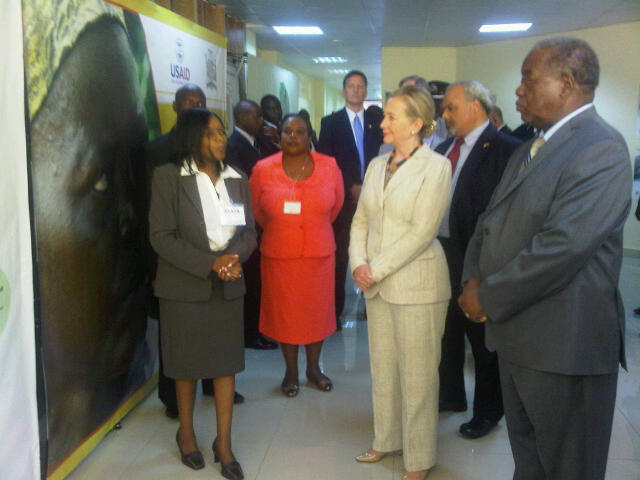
Secretary Clinton and Ambassador Goosby Tour a Hospital in Lusaka

U.S. Secretary of State Hillary Rodham Clinton tours the University Teaching Hospital Paediatric Centre of Excellence, accompanied by Ambassador Eric Goosby, U.S. Global AIDS Coordinator, in Lusaka, Zambia, on June 11, 2011.